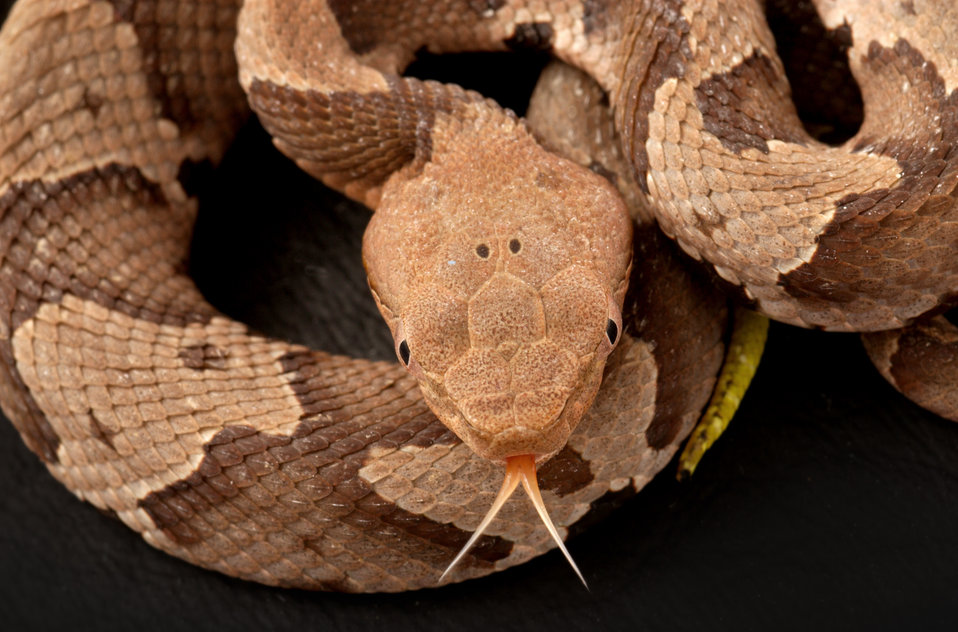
This 2008 photograph depicted a juvenile venomous 'Southern copperhead' snake, Agkistrodon contortrix, as it was coiled in a Decatur, Georgia basement.